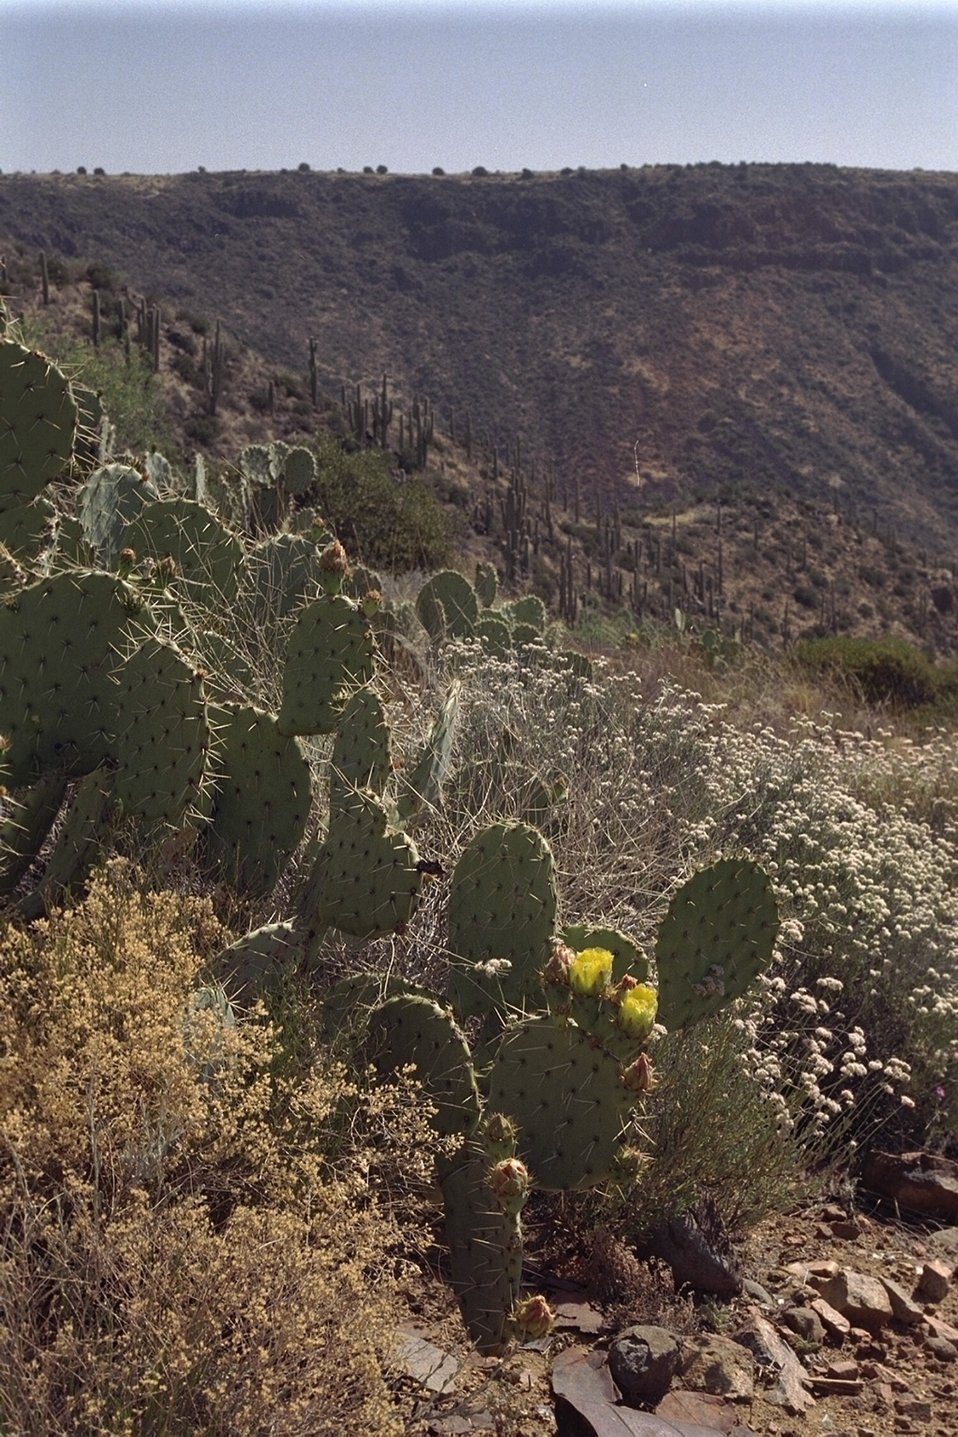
Cactus and Wildflowers grow throughout the 71,000 acres that make up the Agua Fria National Monument.